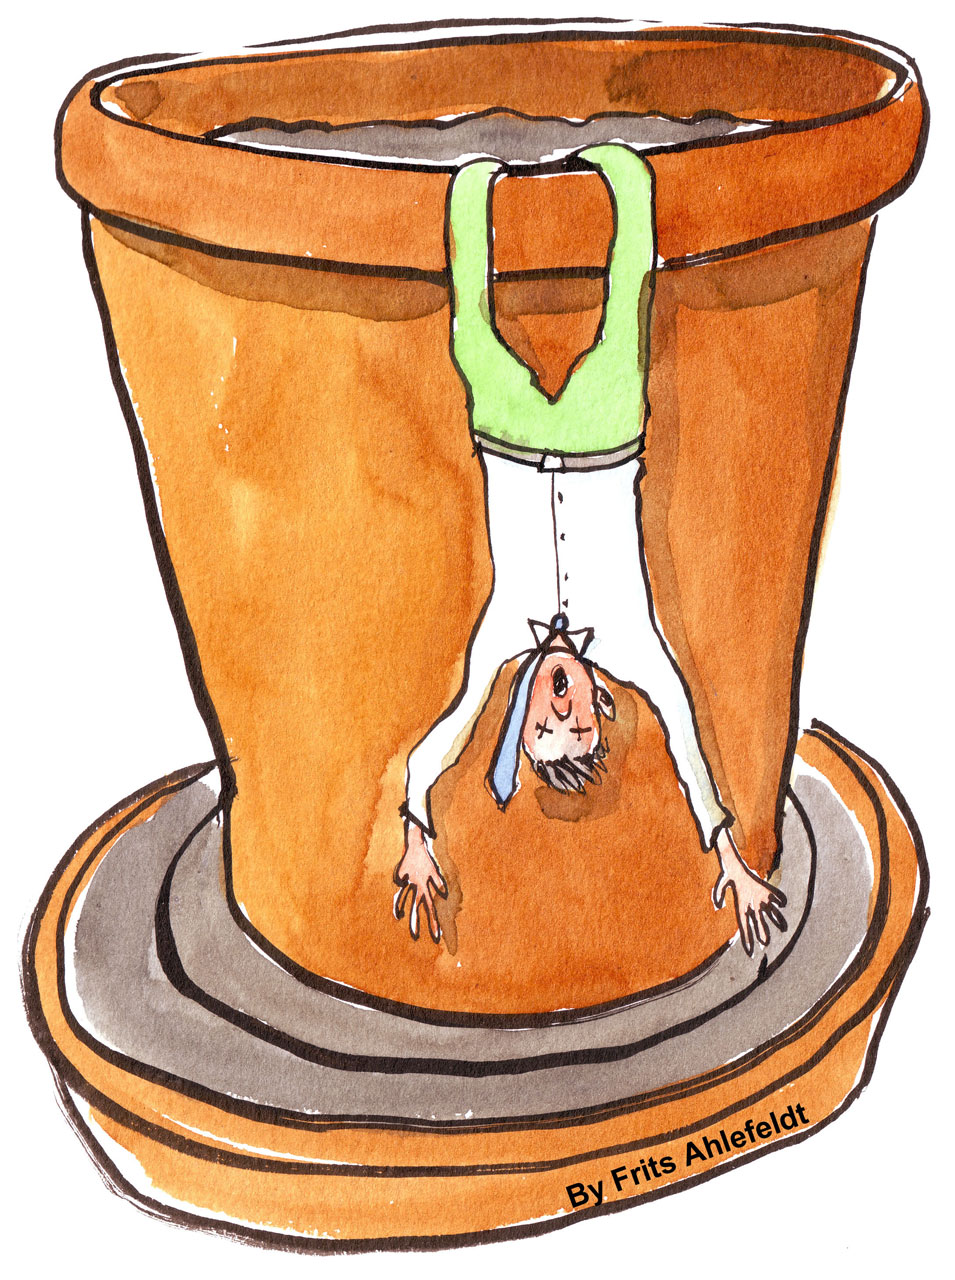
Out of energy

Guy that hangs out of a flower pot.